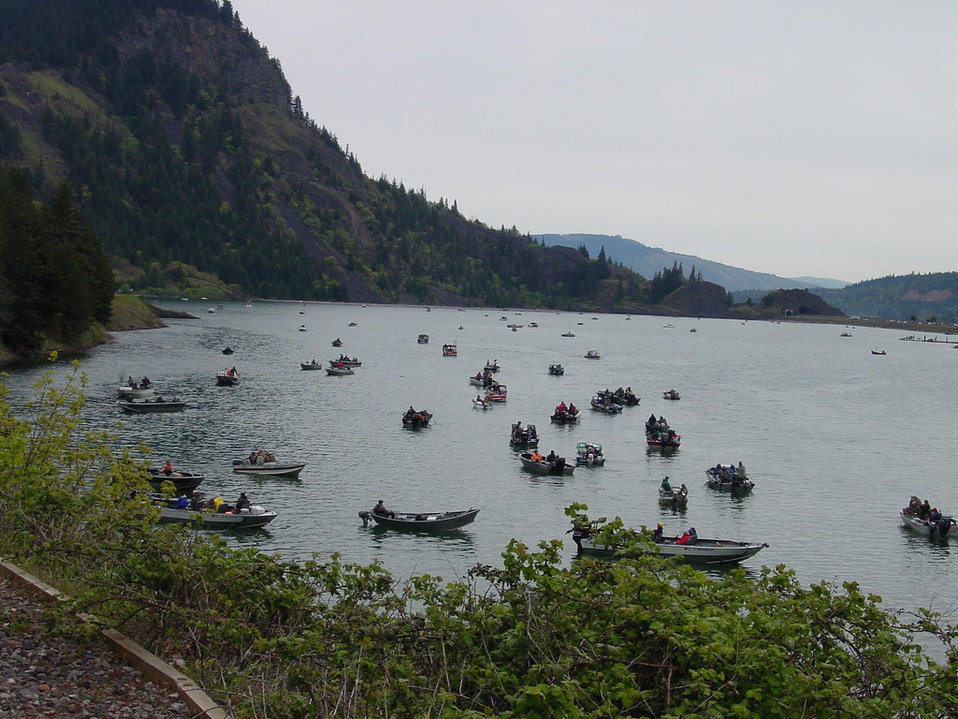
Drano Lake Salmon Fishing

Anglers crowd the waters of Drano Lake, hoping to hook coho salmon raised by Little White Salmon National Fish Hatchery, in Washington. Speros Doulos/USFWS.